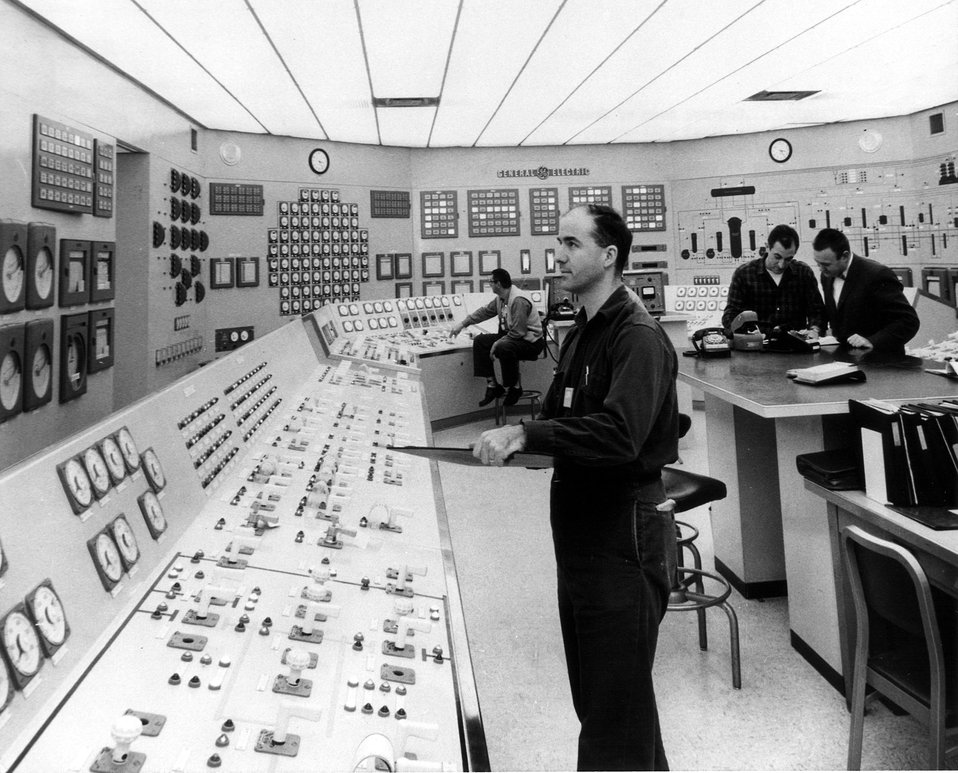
Control room of Dresden Station--The nation's first full-scale, privately financed atomic power facility, the Dresden Nuclear Power Station, is owned by the Commonwealth Edison Company and was built by the General Electric Company. Circa 1962.